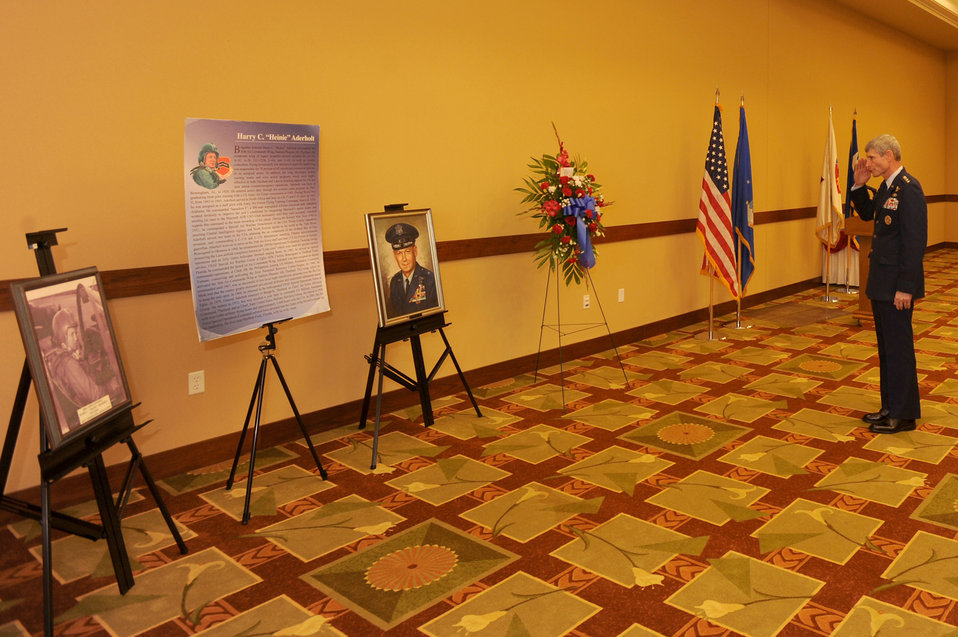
Air Commando One honored, remembered

Air Force Chief of Staff Gen. Norton Schwartz renders a final salute to retired Brig. Gen. Harry